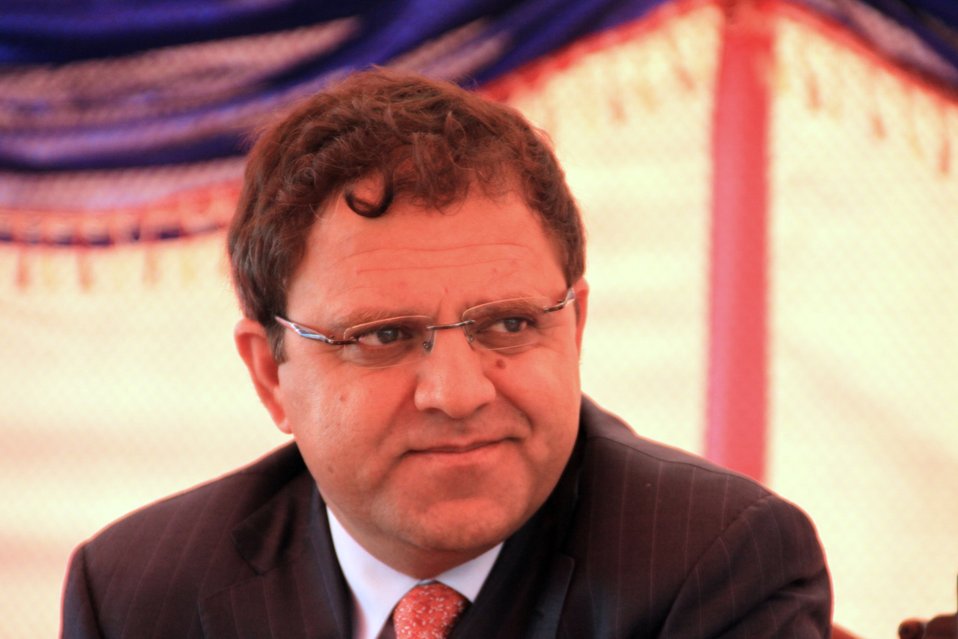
Badam Bagh Farm